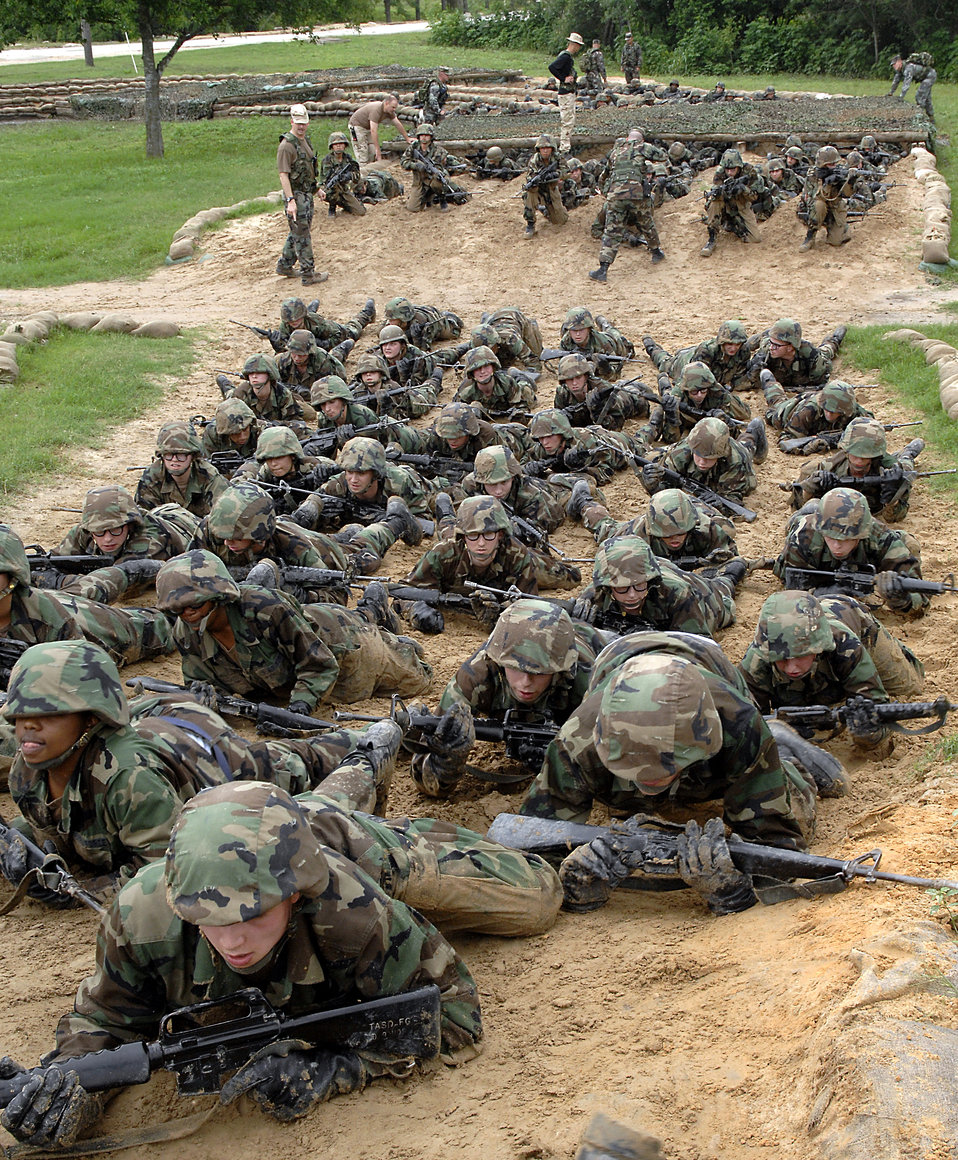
Low crawl

Basic trainees low crawl through an obstacle during a phase of their tactical assault course May 2 at Lackland Air Force Base, Texas. The training is part of the trainees' field training.